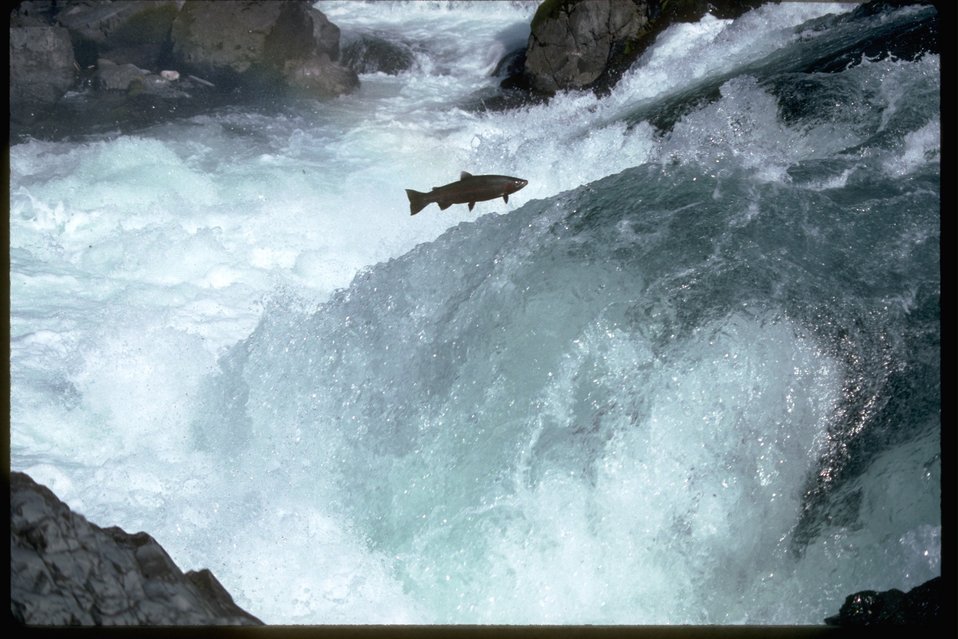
Salmon or Steelhead jumping up falls.